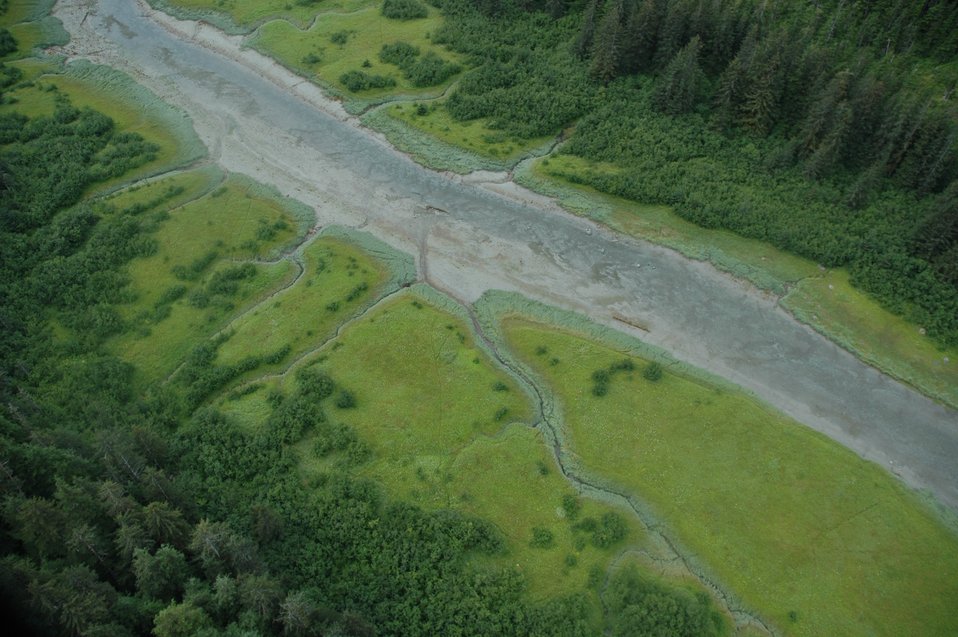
Aerial photograph. A tidal stream and what appear to be its fresh-water tributaries seen at low tide in an estuary.